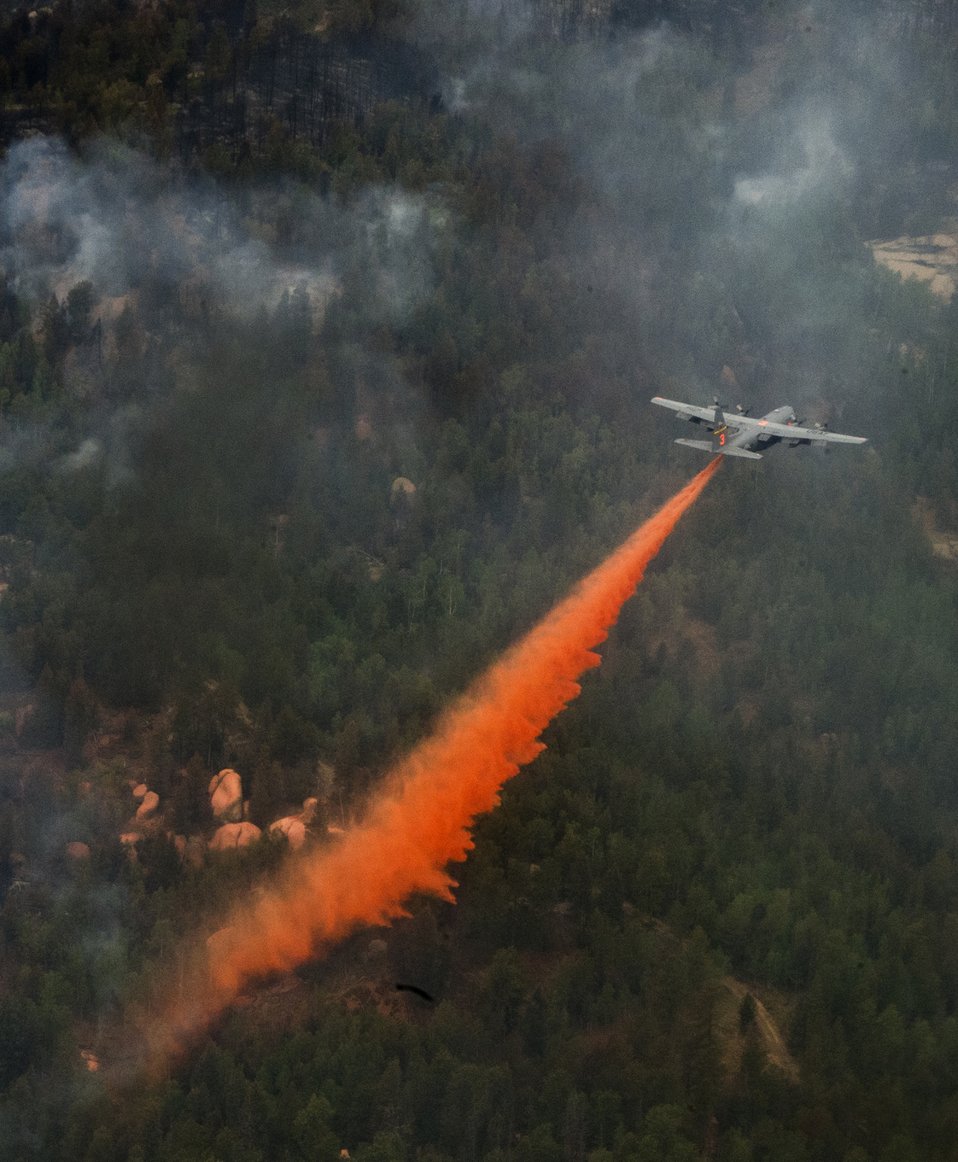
Herculean effort

A C-130 Hercules equipped with a Modular Airborne Fire Fighting System supports fire suppression efforts near Colorado Springs, Colo., June 27, 2012. Four MAFFS-equipped aircraft, two from the Wyoming Air National Guard’s 153rd Airlift Wing and two from the Air Force Reserve Command's 302nd Airlift Wing, flew in support of the U.S. Forest Service to fight fires in Colorado.